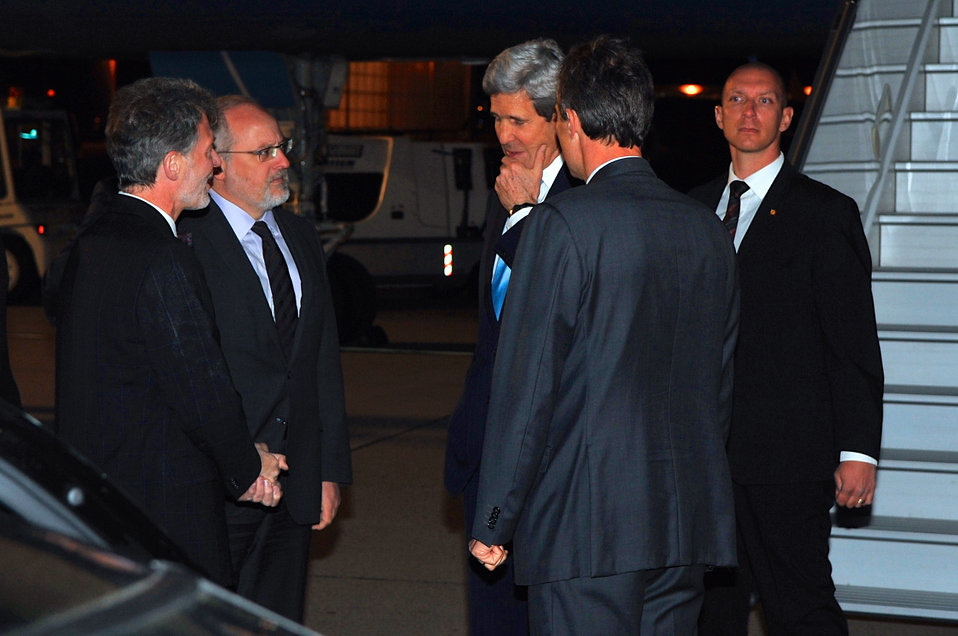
Secretary Kerry Arrives in Geneva For Ukraine Meeting

U.S. Secretary of State John Kerry speaks with Charge d' Affaires Peter Mulrean of the U.S. Mission to the United Nations in Geneva, Ambassador Alexandre Fasel of the Swiss Mission to the United Nations in Geneva, and Jean-Luc Chopard, Chief of Protocol for the Republic and Canton of Geneva, upon arriving in the Swiss city on April 16, 2014, for meetings with Ukrainian, Russian, and European Union officials focused on Ukraine.